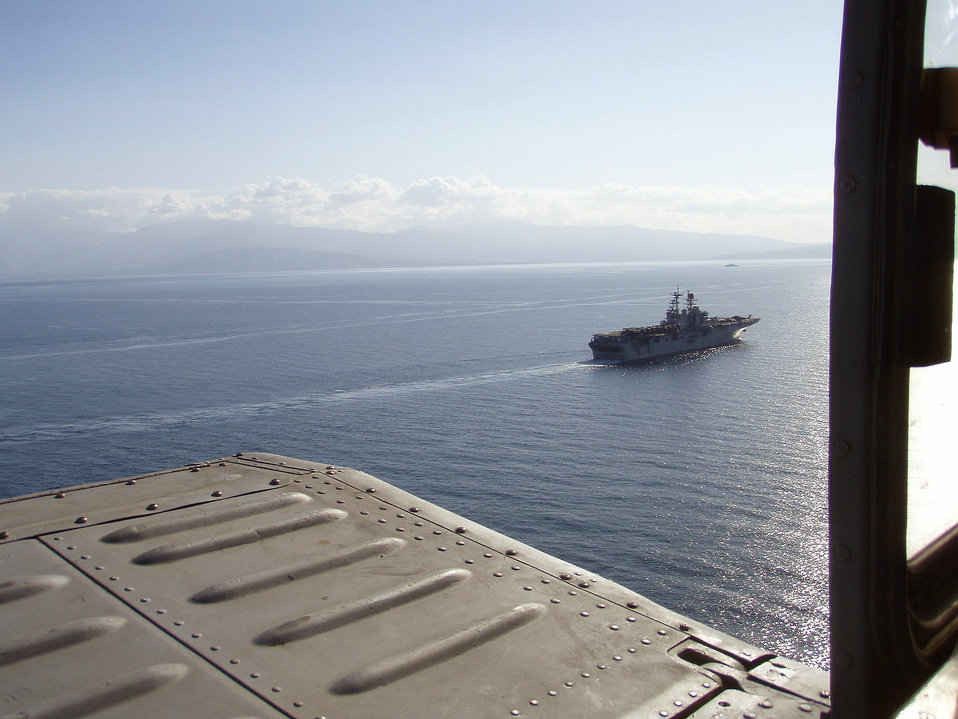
Photographed by U.S. Public Health Service (USPHS) Lt. Cmdr. Gary Brunette, this image depicted an aerial view of the aircraft carrier, USS Bataan, during Caribbean Operation Unified Response. This image was captured By Cmdr. Brunette, as he and his fellow USPHS corpsmen were in the process of being transported to the carrier aboard a helicopter from the Nimitz class supercarrier, USS Carl Vinson (CVN-70).